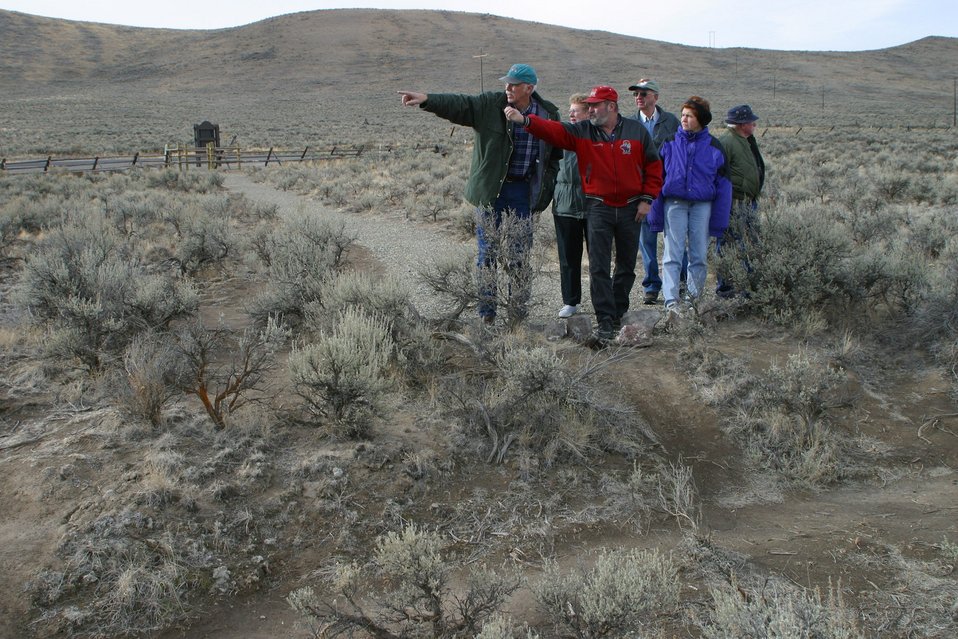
Visitors can read about and see for themselves the Oregon Trail just below the National Historic Oregon Trail Interpretive Center.